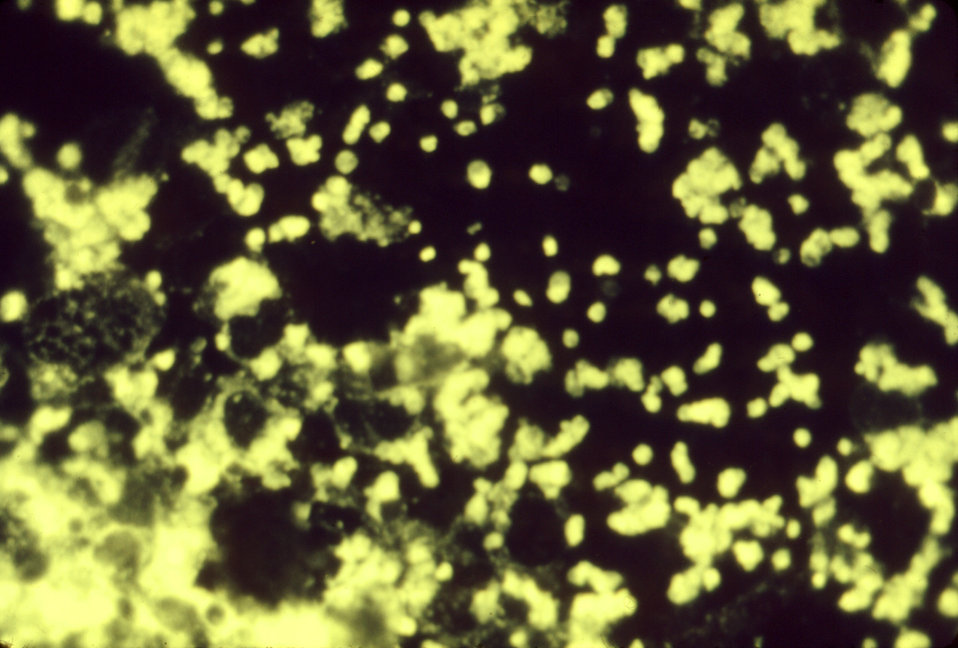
This photomicrograph depicts Francisella tularensis bacteria as seen with a fluorescent antibody stain.